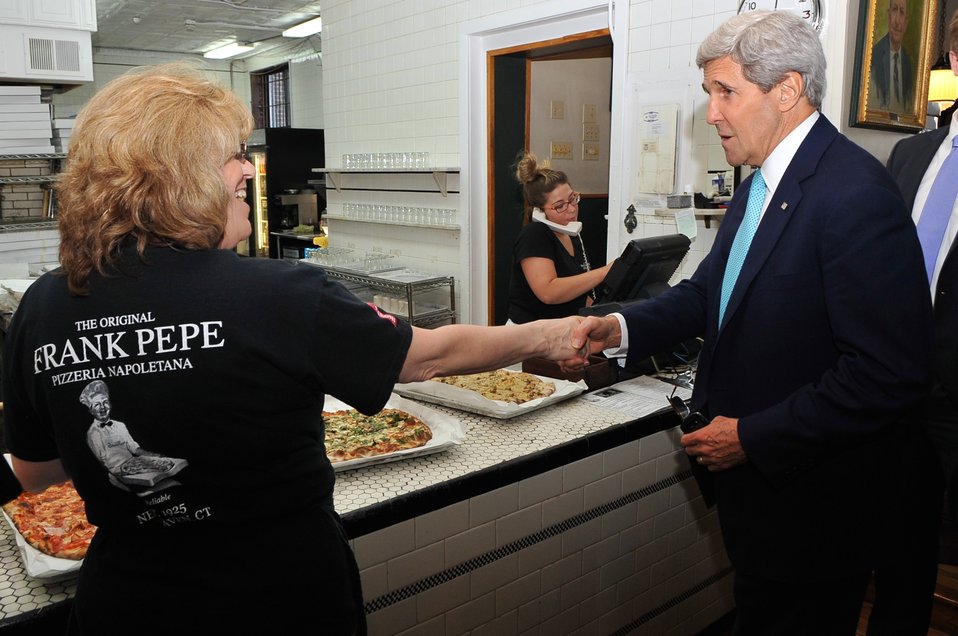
Secretary Kerry Speaks With Server at New Haven Pizza Shop

U.S. Secretary of State John Kerry says hello to a server at the famed New Haven, Connecticut, pizza shop Frank Pepe's during an impromptu stop after the Yale University 1966 graduate addressed Class Day ceremonies on May 18, 2014.